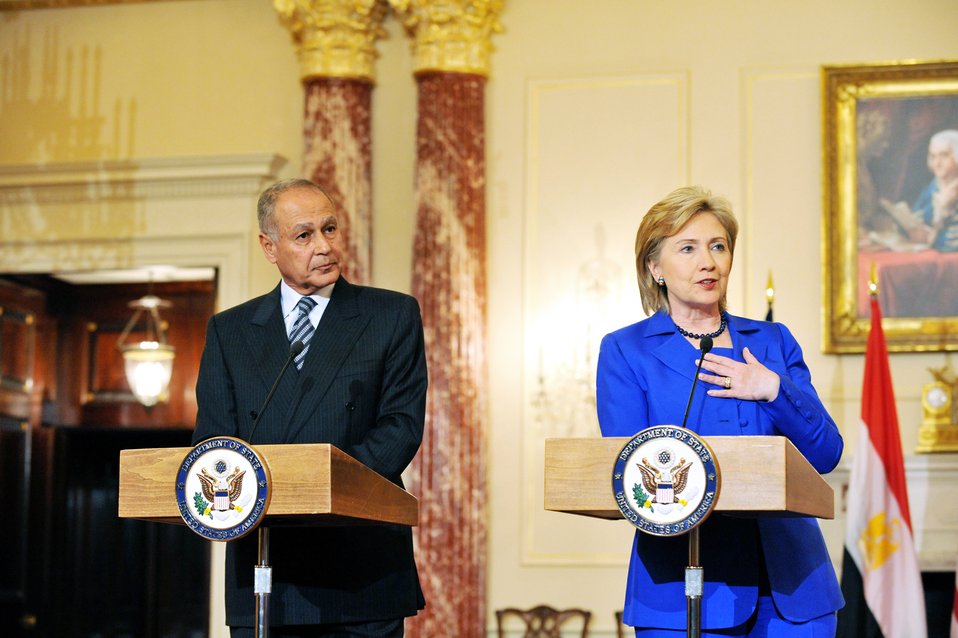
Secretary Clinton Meets With Egyptian Foreign Minister

U.S. Secretary of State Hillary Rodham Clinton hosts a bilateral meeting with Egyptian Foreign Minister Ahmed Ali Aboul Gheit at the U.S. Department of State in Washington, DC May 27, 2009.